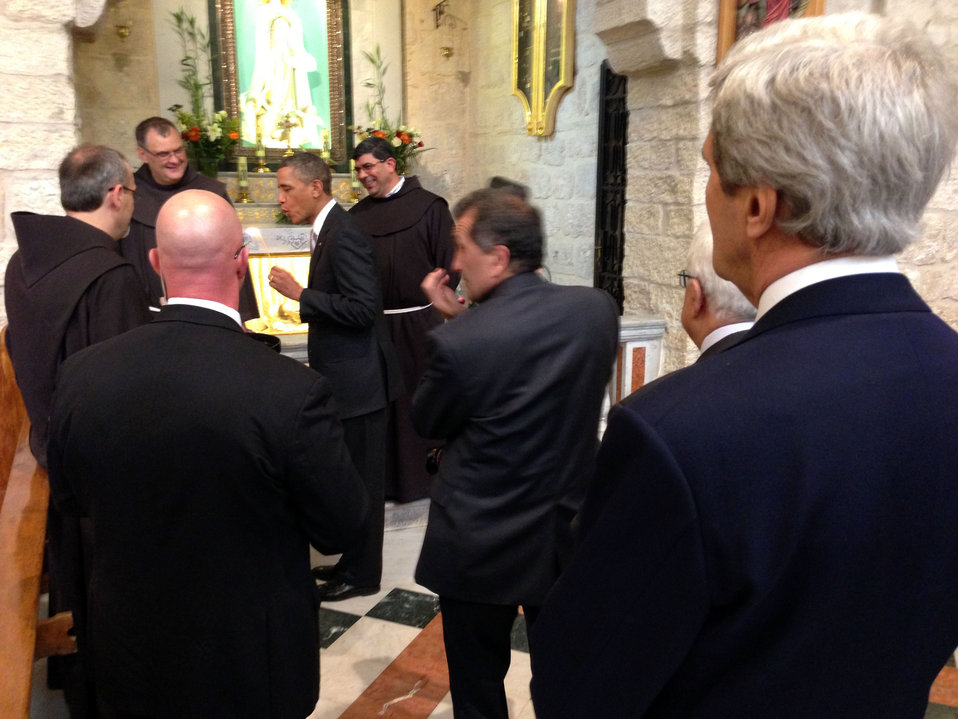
Secretary Kerry Watches President Obama Light a Candle

U.S. Secretary of State John Kerry looks on as U.S. President Barack Obama blows out a match after lighting a candle in one of the sanctuaries at the Church of the Nativity in Bethlehem on March 22, 2013.